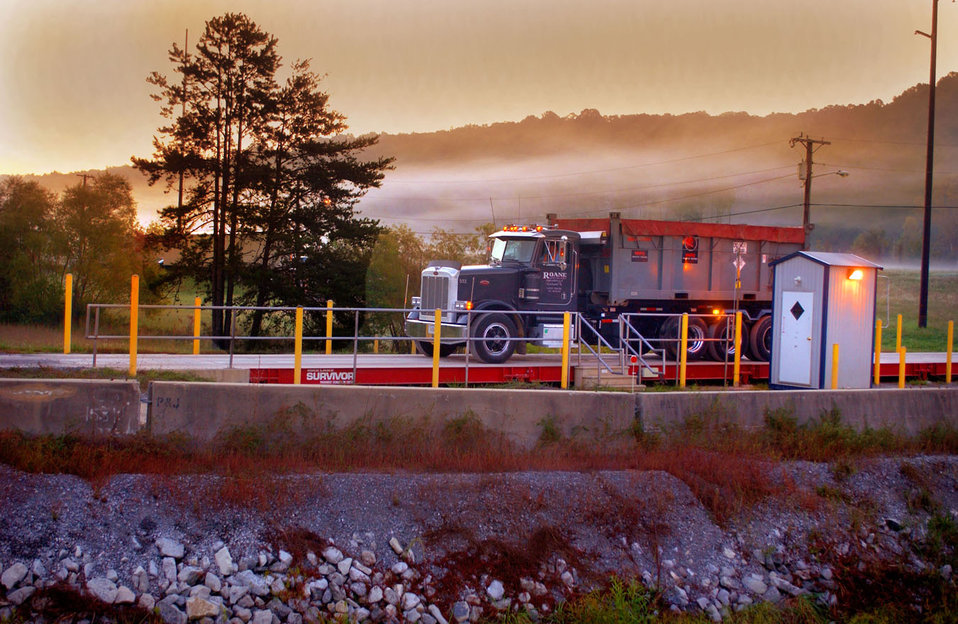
Truck hauling waste at the Environmental Management Waste Management Facility Oak Ridge

04-245-25 DOE photo by Lynn Freeny
Truck hauling waste at the Environmental Management Waste Management Facility Oak Ridge Tennessee 2004